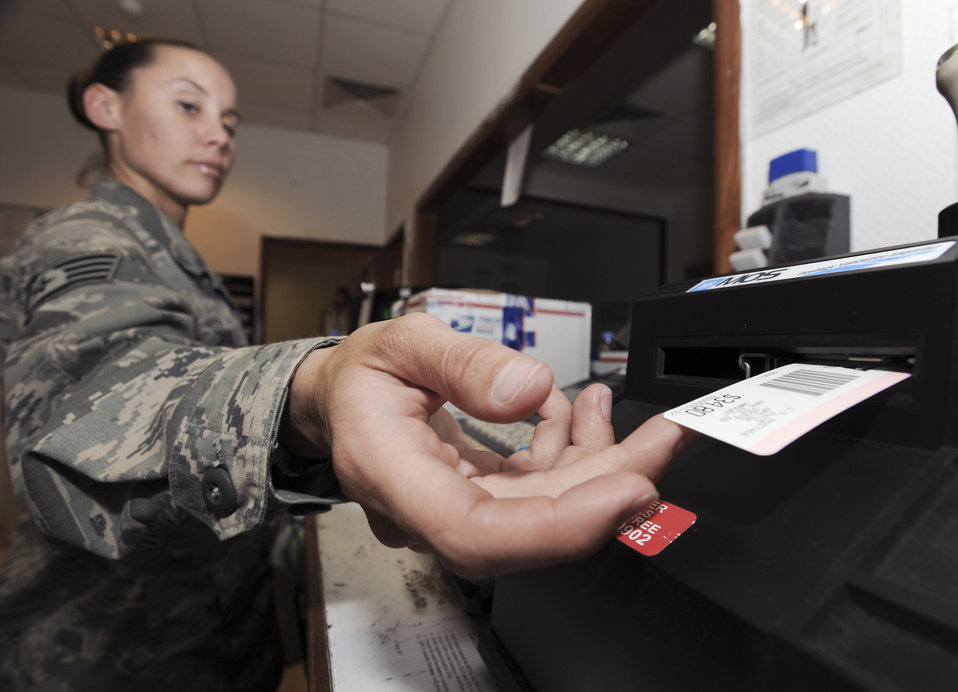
Postal workers deliver pieces of home through mail

Staff Sgt. Cassandra Casul reaches for a price barcode after weighing a customer's package April 20 at an air base in Southwest Asia. Sergeant Casul and fellow postal clerks handle all outgoing mail for the base. Sergeant Casul is a 379th Expeditionary Communications Squadron postal clerk.